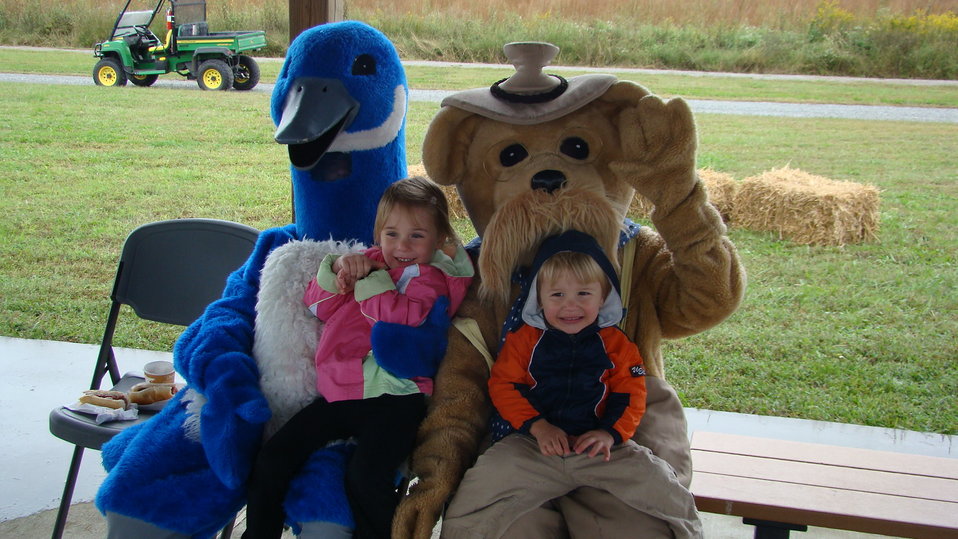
Rappahannock River Valley NWR 15th Anniversary

Puddles and T.R. Bear pose with 'Go Wild!' attendees.